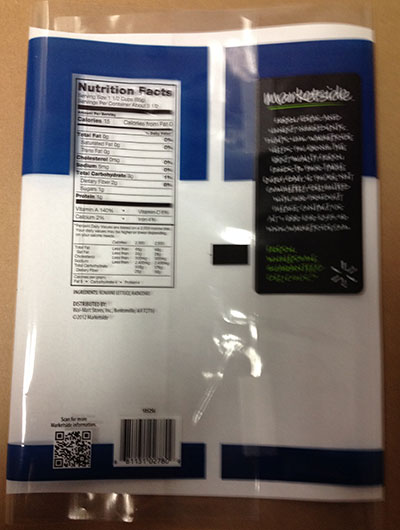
RECALLED – Variety of Bagged salads

March 13, 2014 – Product Recall – Dole Fresh Vegetables Voluntarily Recalls Limited Number of Bagged Salads Due to Possible Health Risk
.